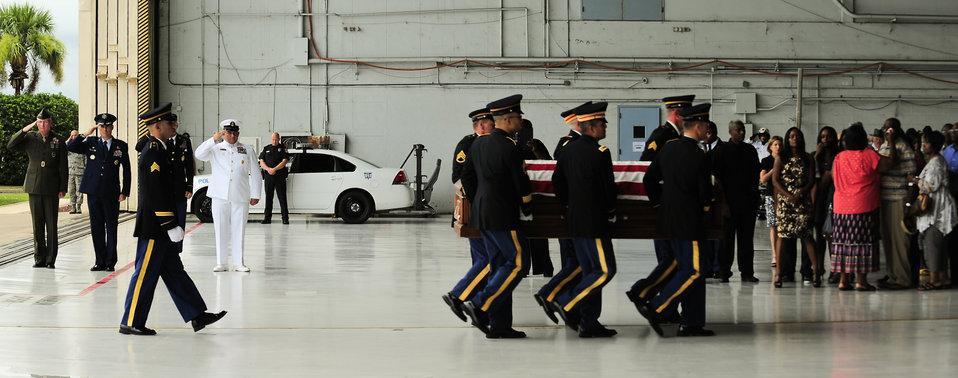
Fallen Heroes

Army Spc. Clarence Williams III is carried by an Army Honor Guard to a hearse July 17, 2012, while his family weeps for him at MacDill Air Force Base, Fla. Williams died July 8, of wounds suffered by an improvised explosive device when enemy forces attacked his unit in Maidan Shahr, Wardak province, Afghanistan.